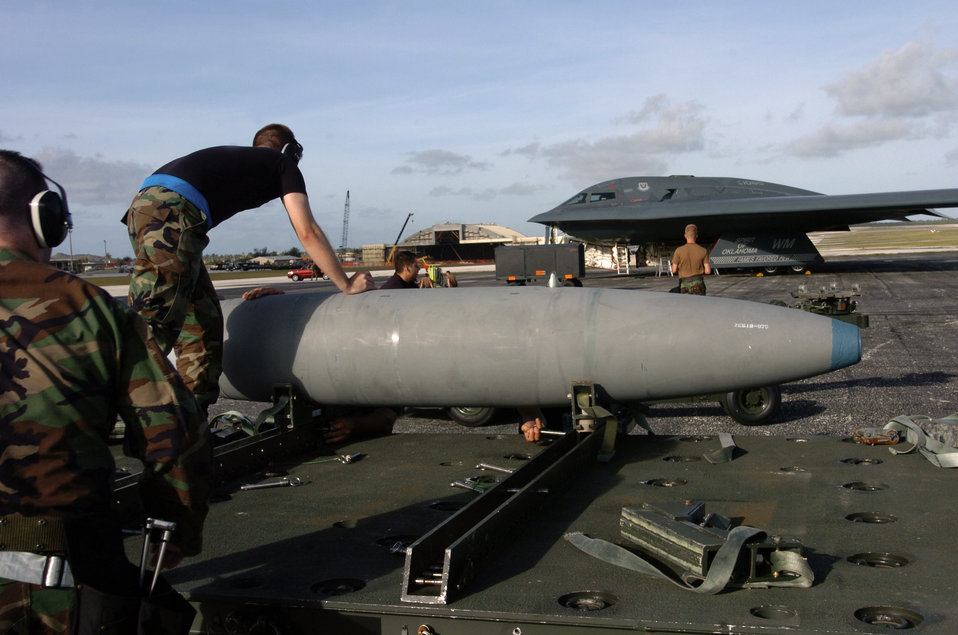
Putting the 'bomb' in bomber

ANDERSEN AIR FORCE BASE, Guam -- Weapons specialists deployed here from the 509th Aircraft Maintenance Squadron at Whiteman Air Force Base, Mo., prepare to load a bomb onto a B-2 Spirit bomber.